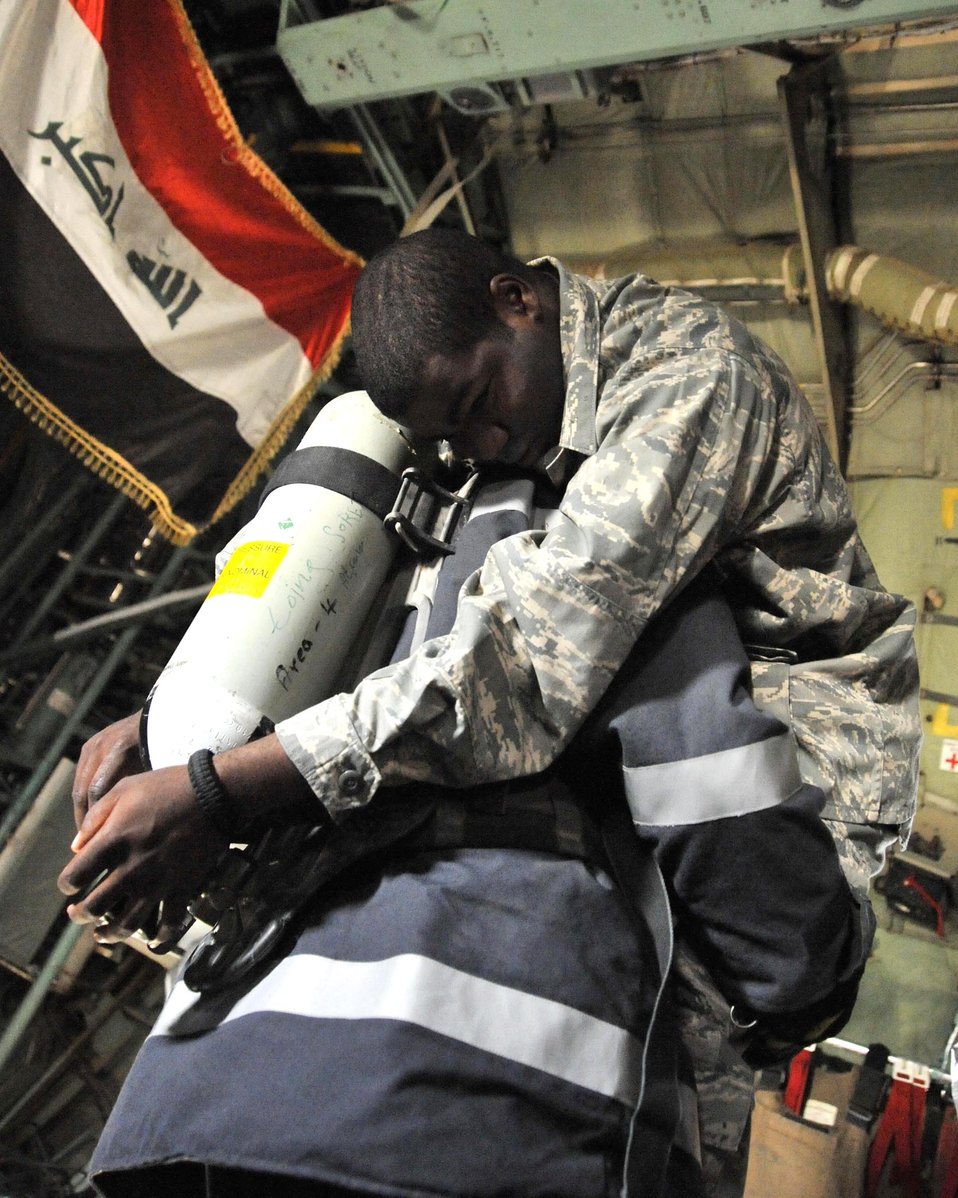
Internal training key to Iraqi air force independence

An Iraqi air force firefighter rescues a U.S. Airman mock casualty during a major accident response exercise Nov. 21 at New al Muthana Air Base, Iraq. The exercise tests the abilities of a joint response of fire rescue, medical and security capabilities.